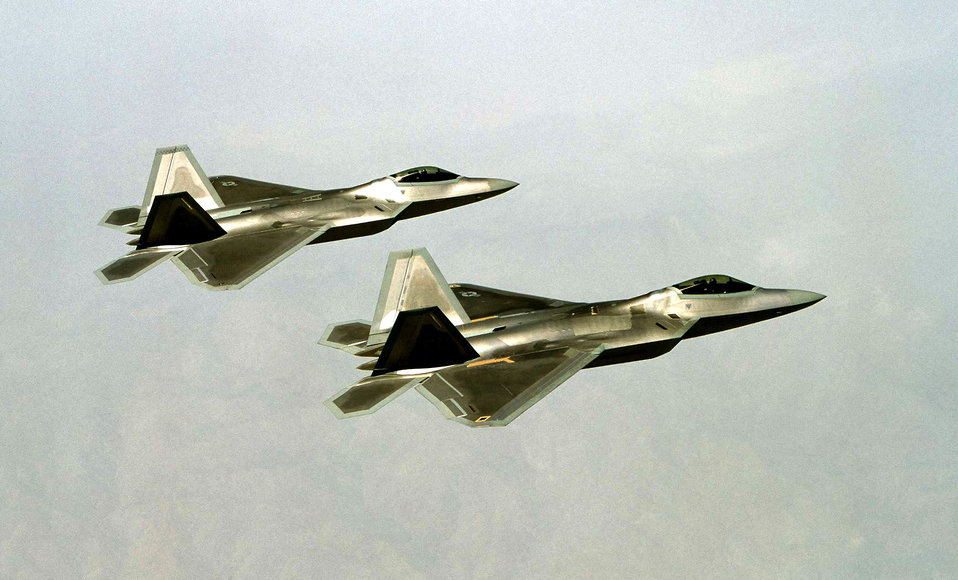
Raptor

OVER EDWARDS AIR FORCE BASE, Calif. -- The F/A-22 Raptor moves into operational testing, flying the first two-ship mission here April 29.